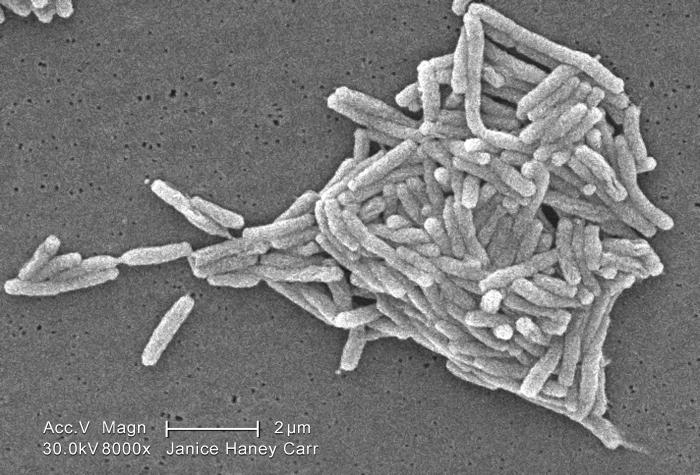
Under a moderately-high magnification of 8000X, this scanning electron micrograph (SEM) depicted a grouping of Gram-negative Legionella pneumophila bacteria. Please see PHIL 11092 through 11160 for additional SEMs of these organisms, specifically PHIL 11128 for a colorized version of this image. It appears that a few are still joined to one another just prior to the completion of their reproductive process known as cell division. In some of these views you'll note the presence of flagellar appendages.